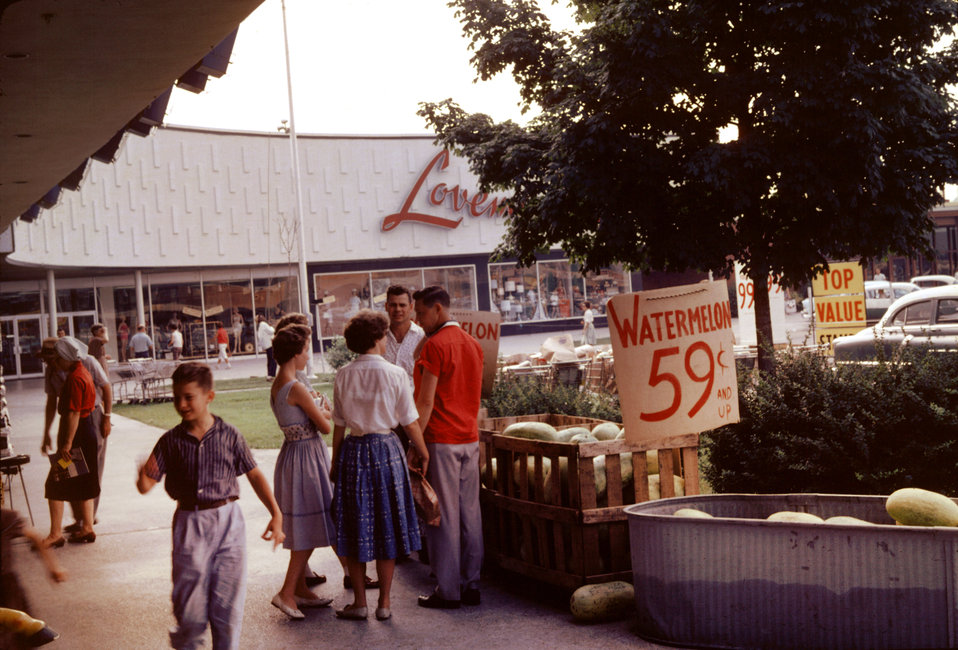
Oak Ridge Shopping Center With Watermelons For Sale

DOE photo Ed Westcott

Oak Ridge Shopping Center With Watermelons For Sale Oak Ridge Tennessee July 1961